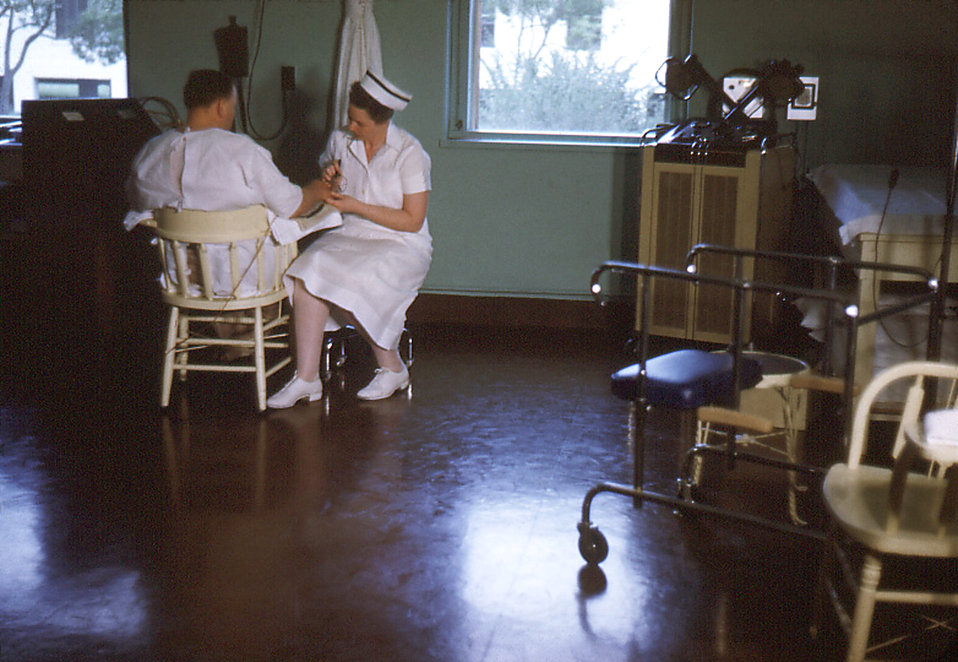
Depicted in this historic image was the interior of the Physical Therapy Room in the Carville, Louisiana Leprosarium, in which a patient was receiving therapy being administered by a Public Health (PH) nurse. When on duty, the nurse was in charge of all treatments involving the electrical appliances found in this clinical setting that were therapeutically prescribed in order to treat leprosy's crippling effects on the hands and feet.